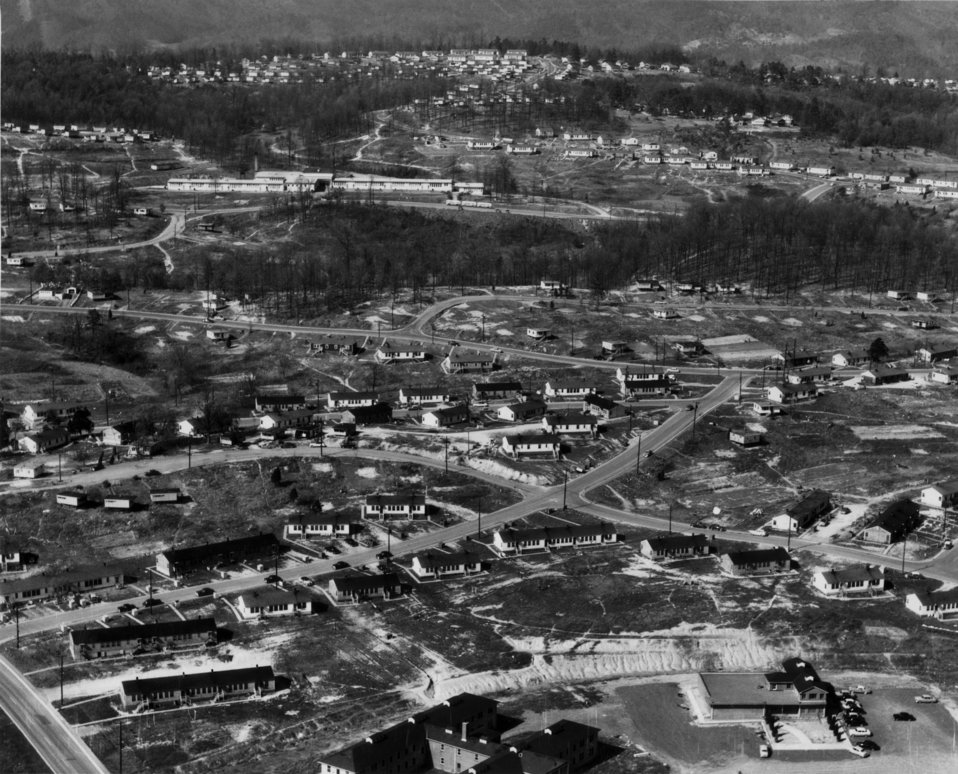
Air View West Village, Linden School Oak Ridge

55-0196 DOE photo by Ed Westcott 1955